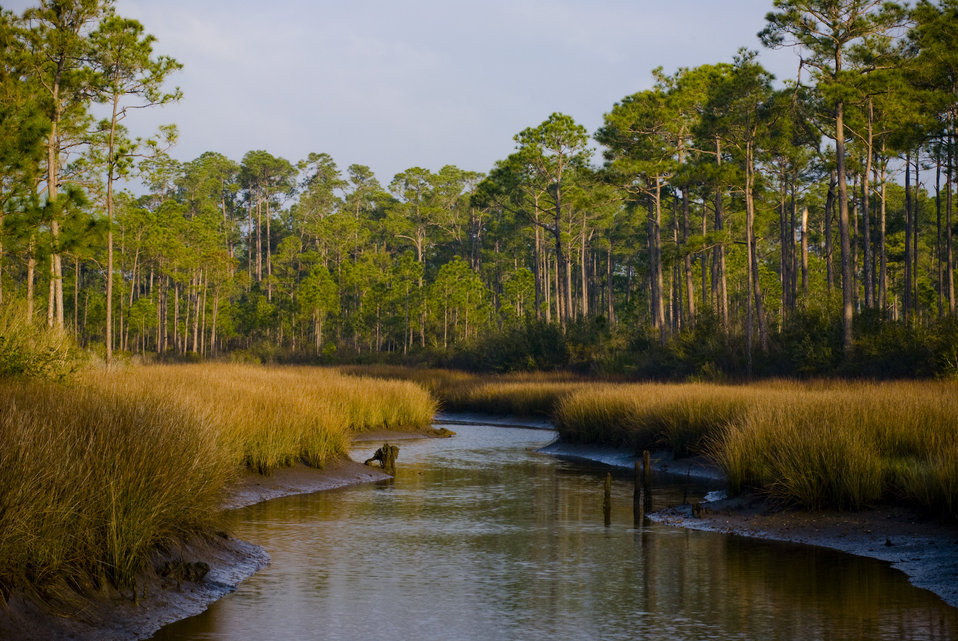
Grand Bay

As sea level rises, coastal shorelines like this will retreat, according to “A State of Knowledge Report” from the U.S. Global Change Research Program. Salinity is likely to increase in tidal rivers like this one in the Grand Bay National Wildlife Refuge.